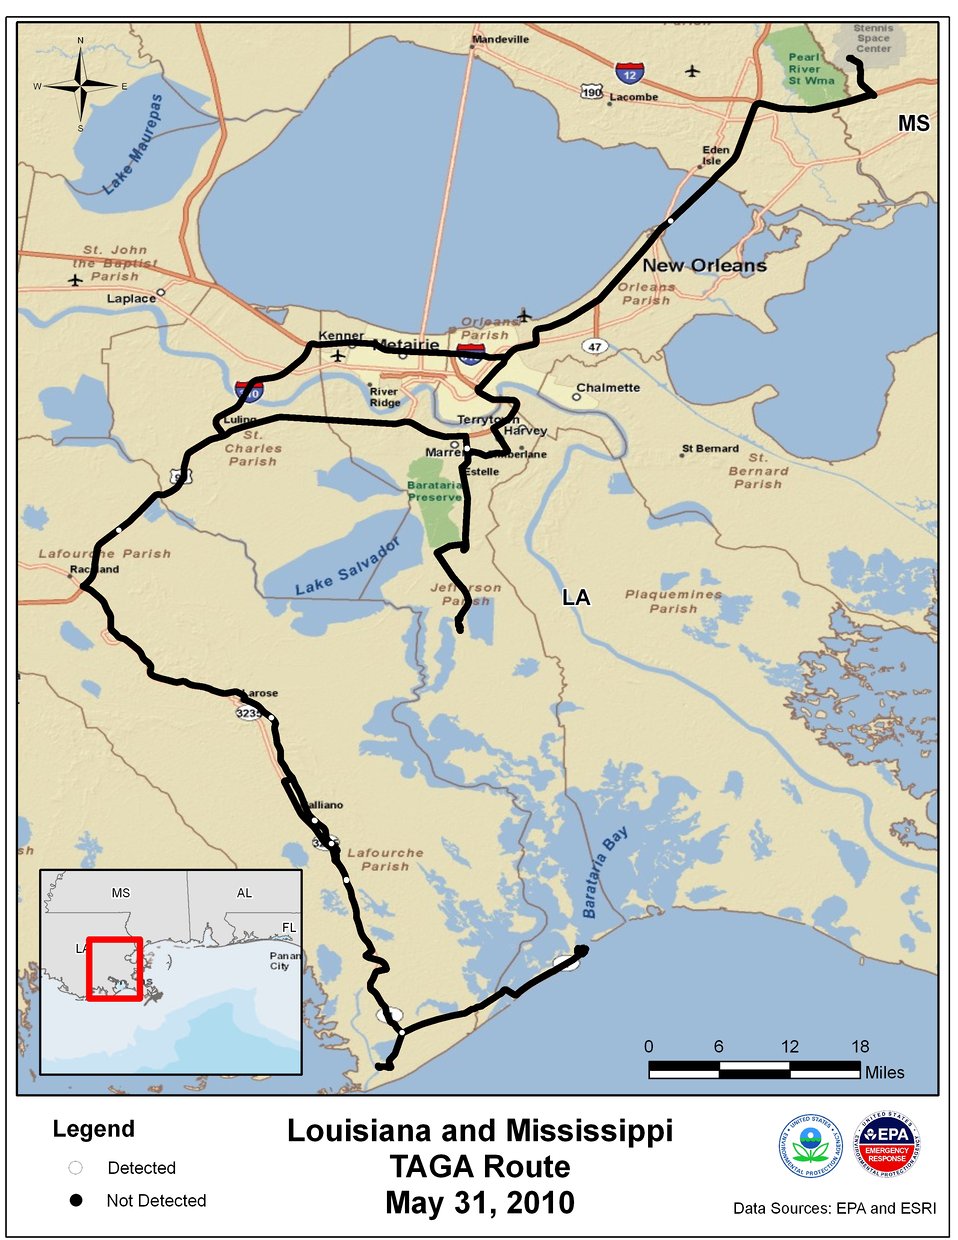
EPA TAGA Air Monitoring Locations May 31, 2010